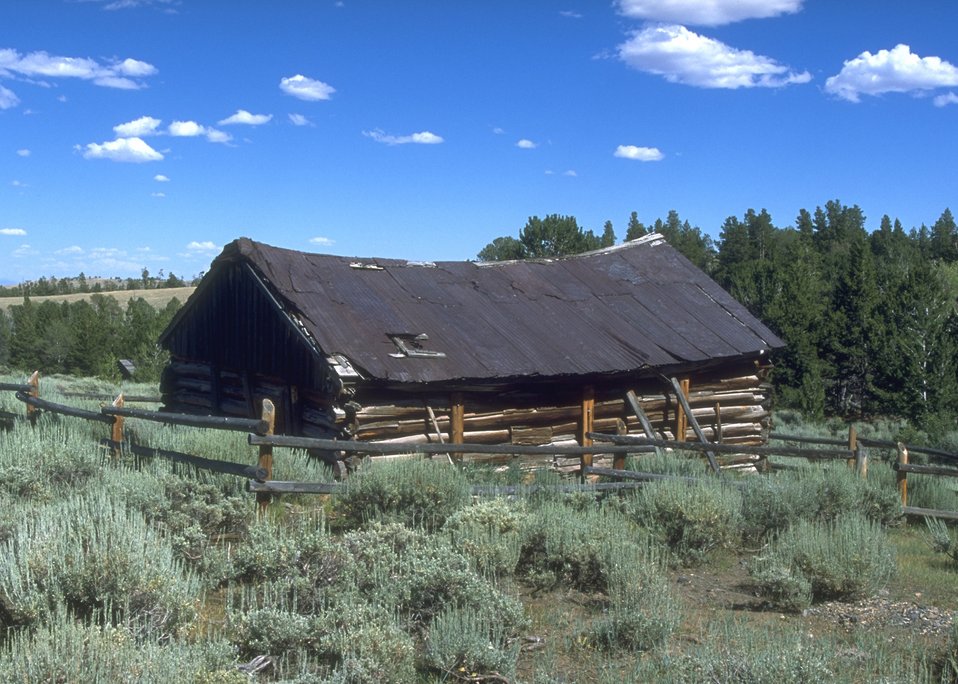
Structures at Miners Delight, Lander Field Office.